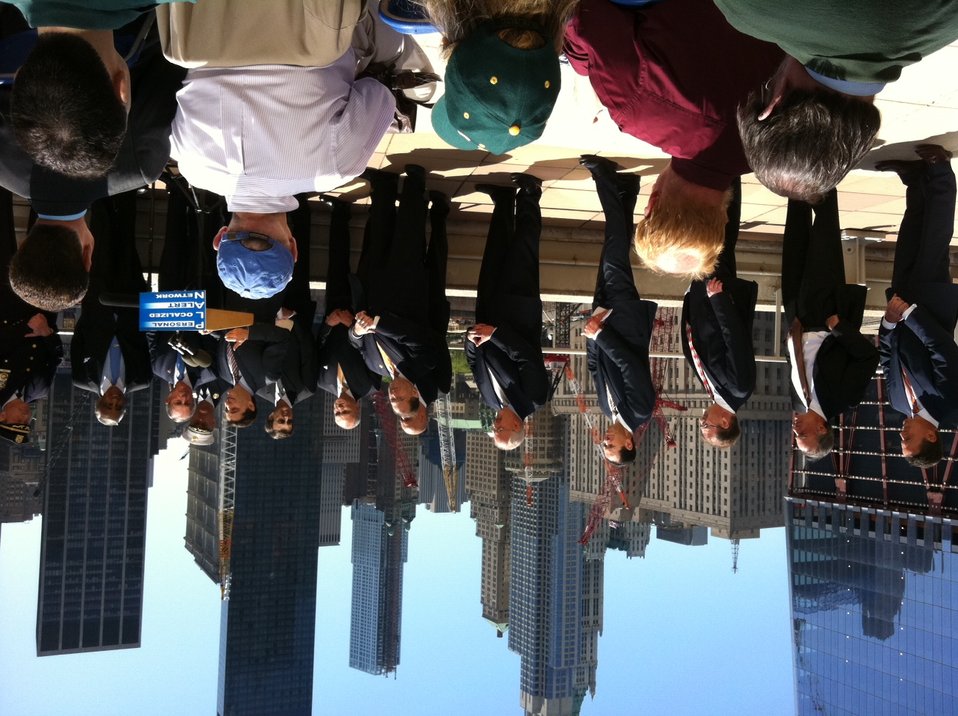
Chairman Genachowski at PLAN launch